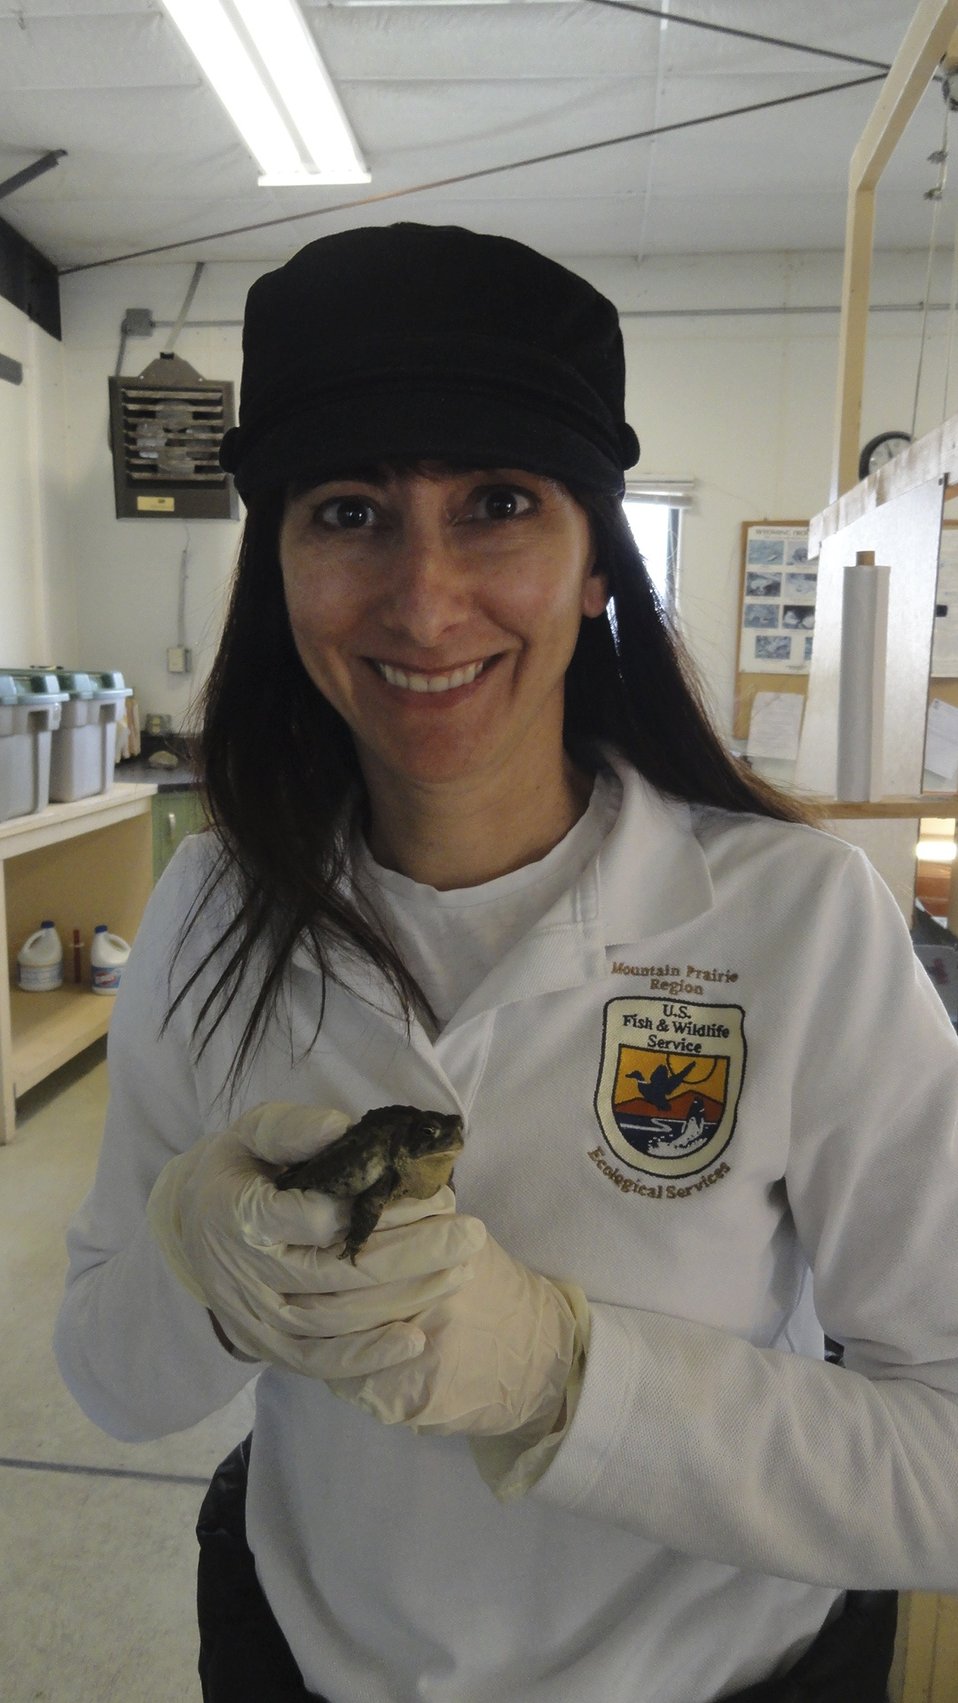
Visiting Saratoga National Fish Hatchery

In April of 2014, regional office employees visited Saratoga National Fish Hatchery to learn more about its efforts towards recovering the Wyoming toad (Bufo baxteri).

The hatchery adopted a unique role in becoming the first unit in the National Fish Hatchery System to become involved in rearing endangered amphibians. The Wyoming toad was a common sight on areas of the Laramie Plains, Albany County, Wyoming, into the early 1970s but the species' populations crashed in the mid-1970s. The Wyoming toad was listed as endangered by the U.S. Fish & Wildlife Service in January 1984. Found only in southwestern Wyoming, the Wyoming toad is considered the most endangered amphibian in North America. The hatchery maintains a captive population for breeding, rearing, and refugia, and the offspring from this program will be used for reintroduction efforts.